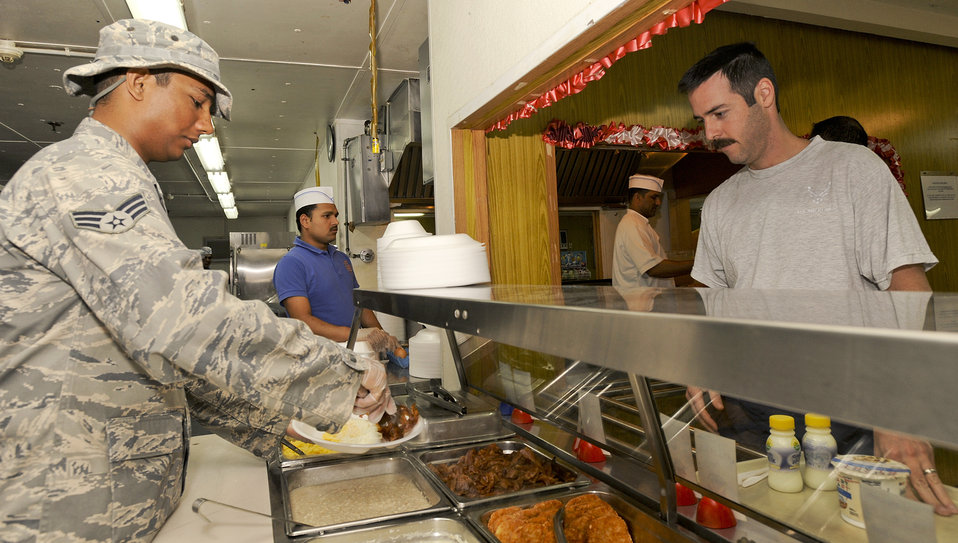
Feeding the force

Senior Airman Cecil D'Souza serves Maj. Corbit Bufton breakfast March 23 at an air base in Southwest Asia. Military members working in the dining facilities aid local contract workers in serving and cooking the food during peak meal hours. Airman D'Souza is a services journeyman with the 379th Expeditionary Force Support Squadron. He is a native of Virginia and is deployed from McChord Air Force Base, Wash. Major Bufton is a C-17 Globemaster III pilot with the 816th Expeditionary Airlift Squadron.